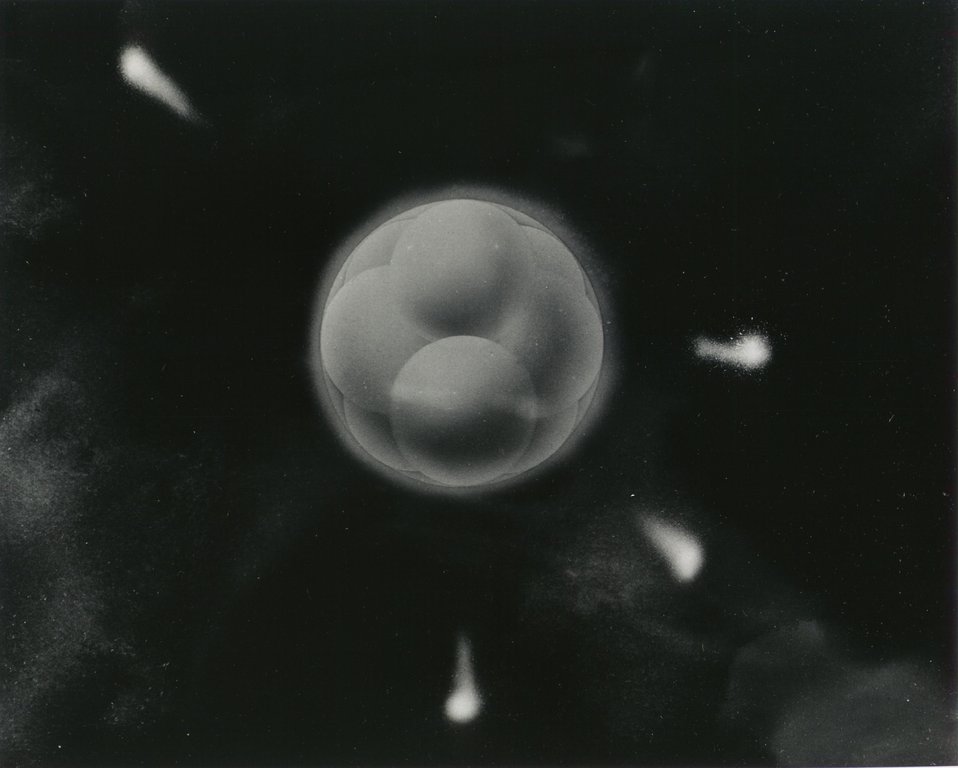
Artist's conception of isotopic energy release. c. 1962